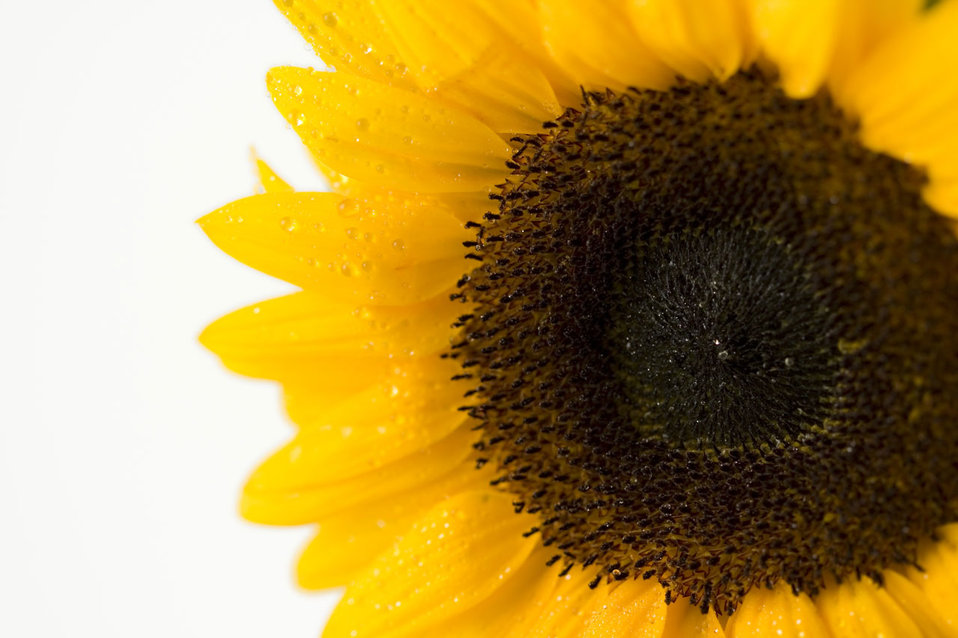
Sunflower

Close up image of sunflower.